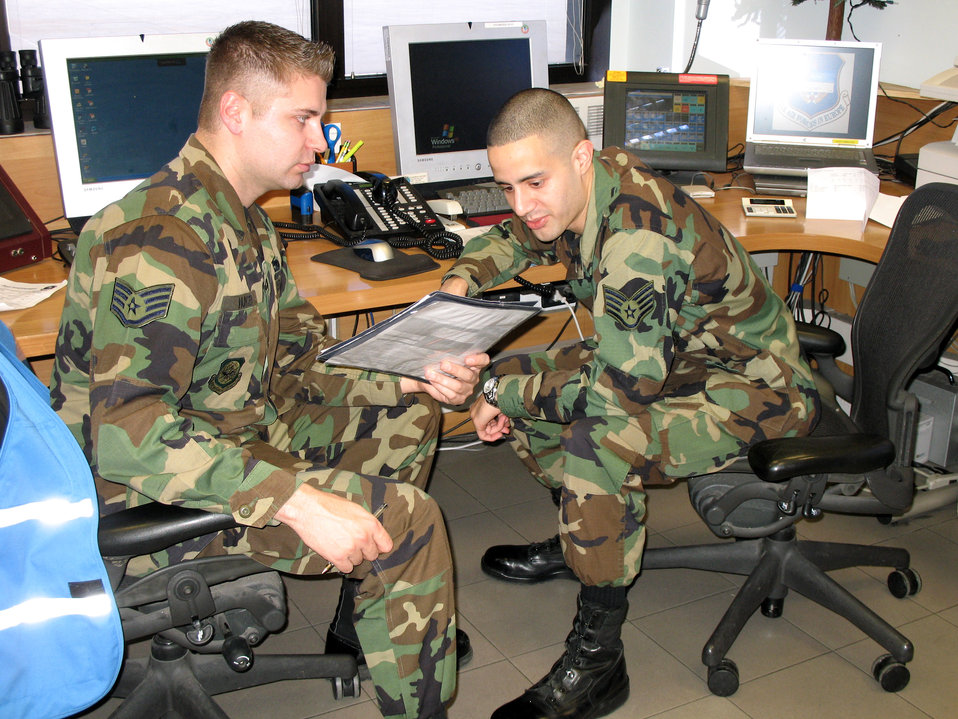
Serving through the season: Staff Sgt. Fredric Rosario

Staff Sgt. Jeff Hunter tells Staff Sgt. Fredric Rosario how many passengers have boarded the aircraft at Aviano Air Base, Italy.